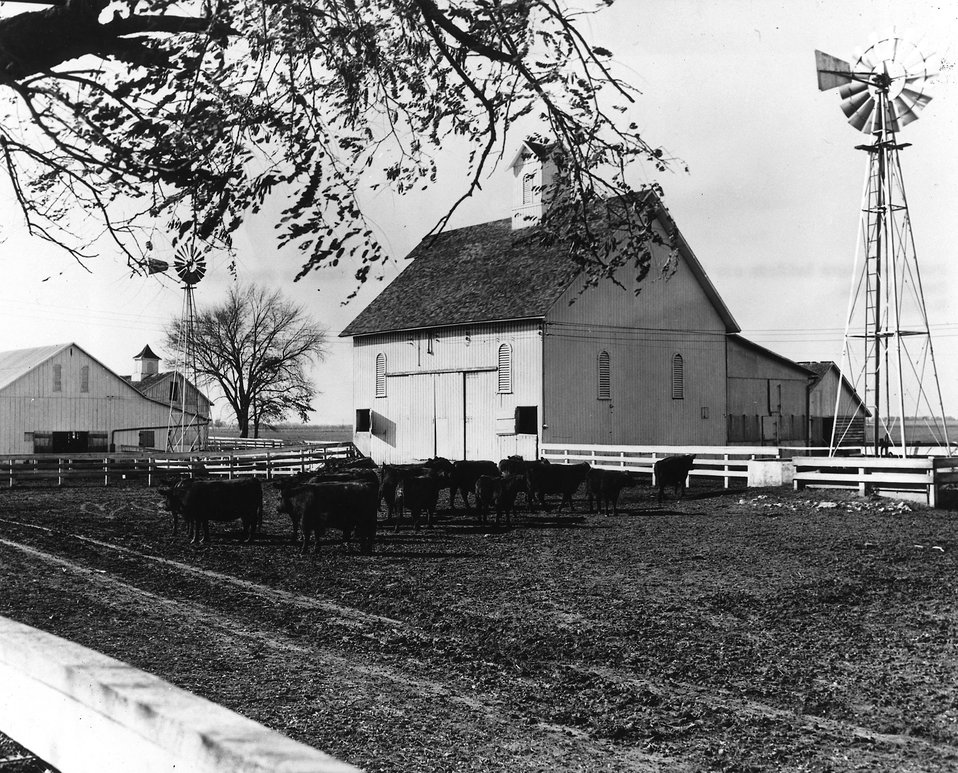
Multi-bladed windmills were once widely used to pump water on American farms. c. 1977